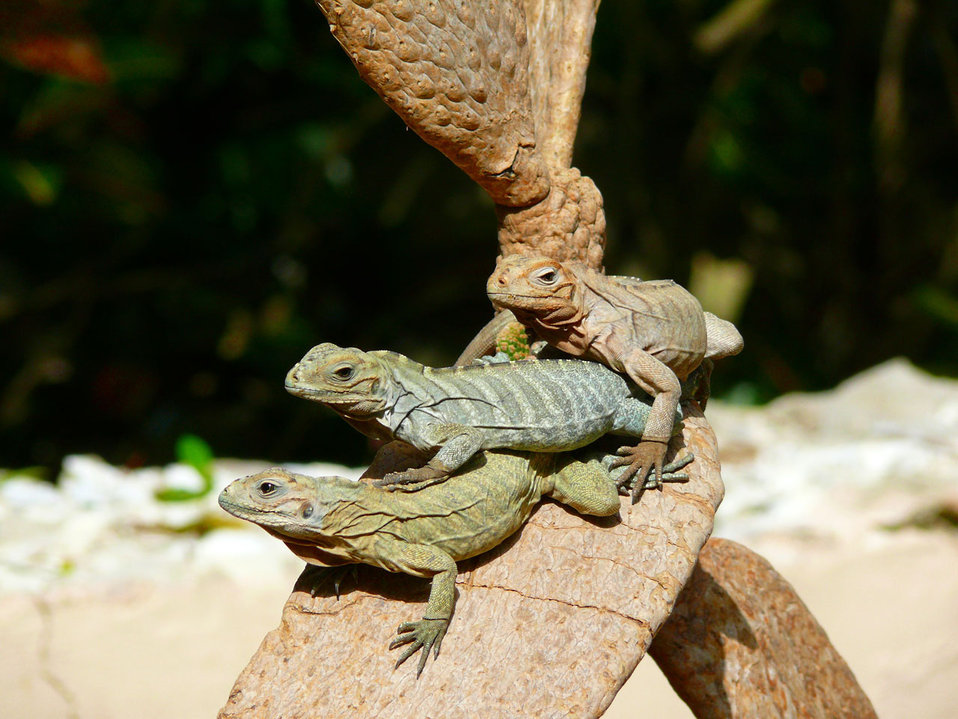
Iguanas on the tree.